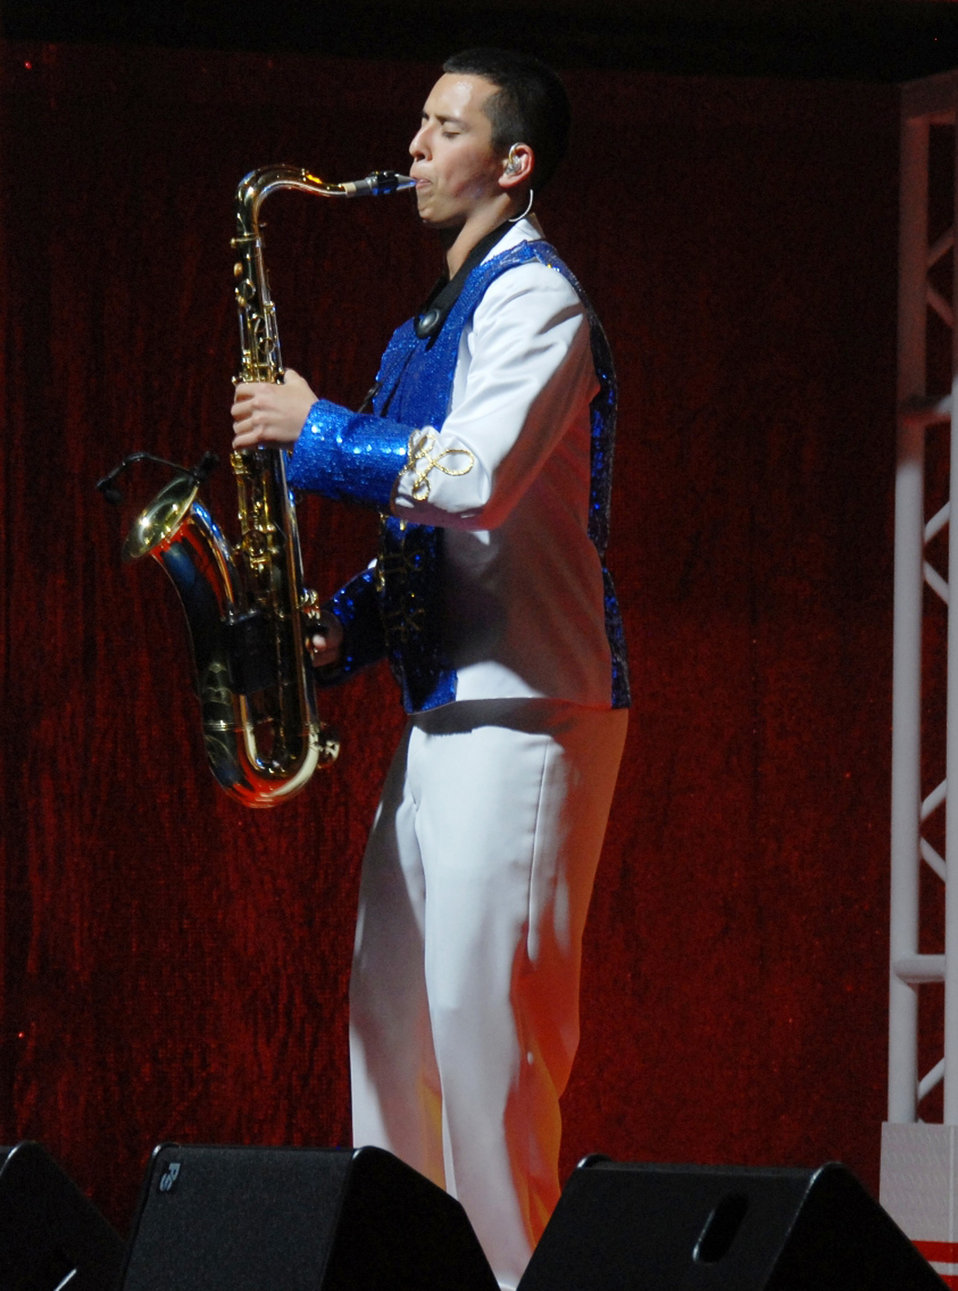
Tops in Blue set to kick off 'Rhythm Nation' tour

Airman 1st Class Gabriel Villanueva plays a solo during the group's dress rehearsal May 20, 2011 at Lackland Air Force Base, Texas. The 2011 Tops in Blue team is set to kick off their 'Rhythm Nation' tour with a performance May 25, 2011, at Barksdale Air Force Base, La.. The show provides a glimpse of a century of popular music and how it grew through new rhythms and technology. Airman Villanueva is a 2011 Tops in Blue tenor saxophonist. He is an aircrew flight equipment apprentice from Dover Air Force Base, Del.